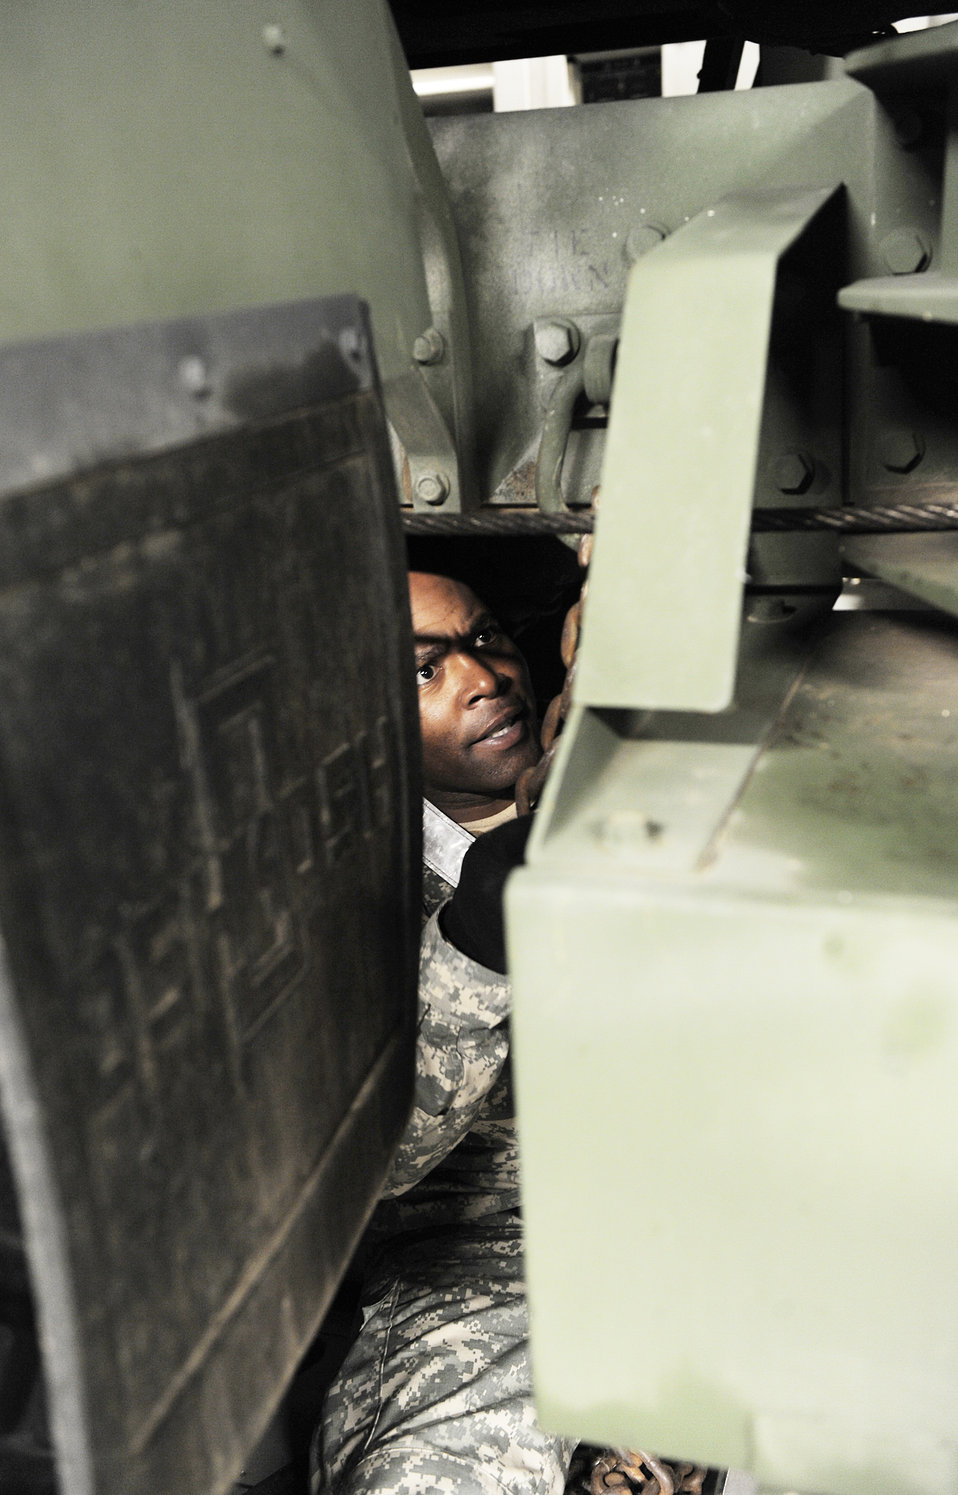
United Response

Army Sgt. Ronald Cooper secures an M1120 Heavy Expanded Mobility Tactical Truck Load Handling System in the C-17 Globemaster III from the 512th Airlift Wing, Dover Air Force Base, Del., Jan. 19, 2010, at Langley Air Force Base, Va. Personnel from Langley and Fort Eustis, Va., worked together to load the C-17 as part Operation Unified Response. Sergeant Cooper is a cargo specialist assigned to the Headquarters, Det. 24.